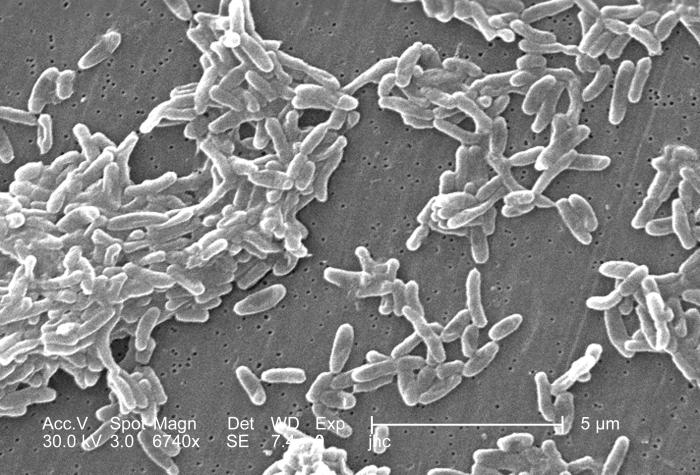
Magnified 6,740x, this scanning electron micrograph (SEM) depicted a grouping of Ralstonia mannitolilytica bacteria, which was harvested from a pure culture.